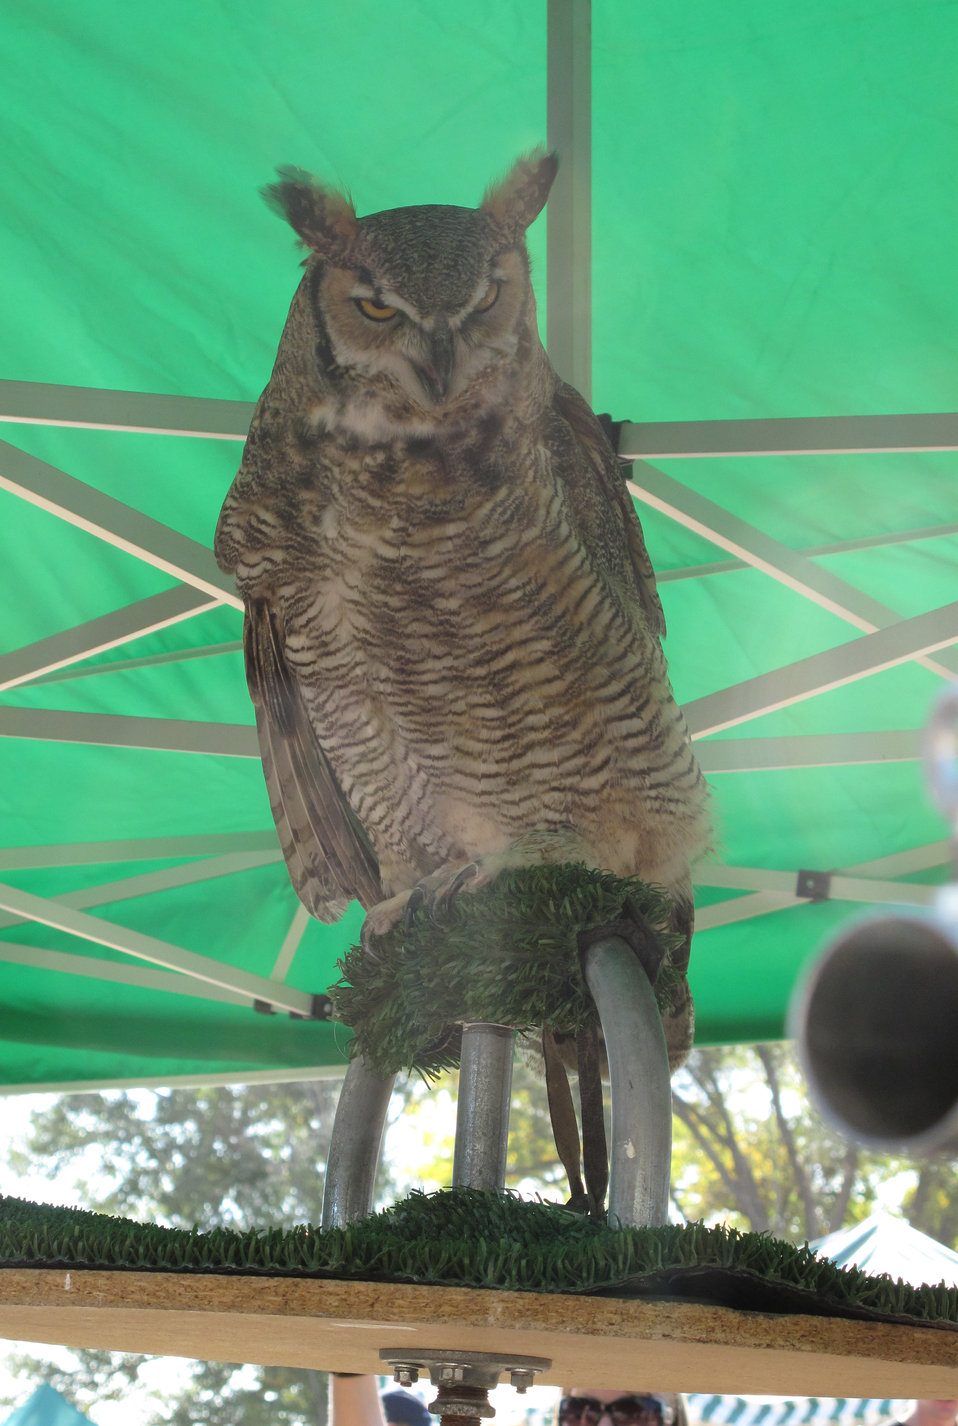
Refuge Round-Up 2010